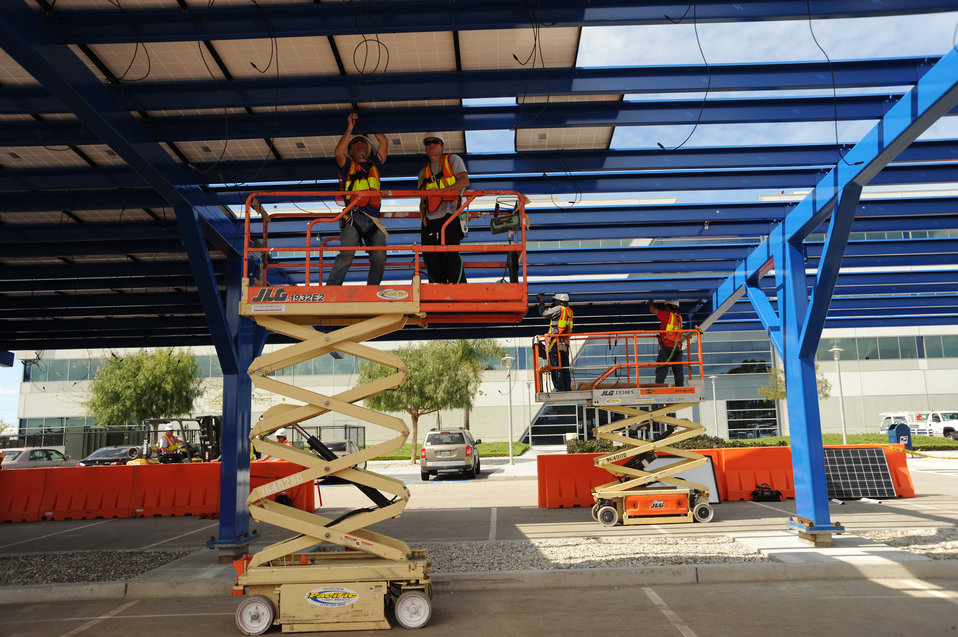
Solar power

Work continues on the solar panels being installed on Los Angeles Air Force Base, Calif. When completed, the panels will decrease the amount of electricity the base purchases from the local power company. A similar project on the roof of the base commissary converts sunshine into about 290 kilowatt-hours of electricity each day, enough to power 10 typical households.